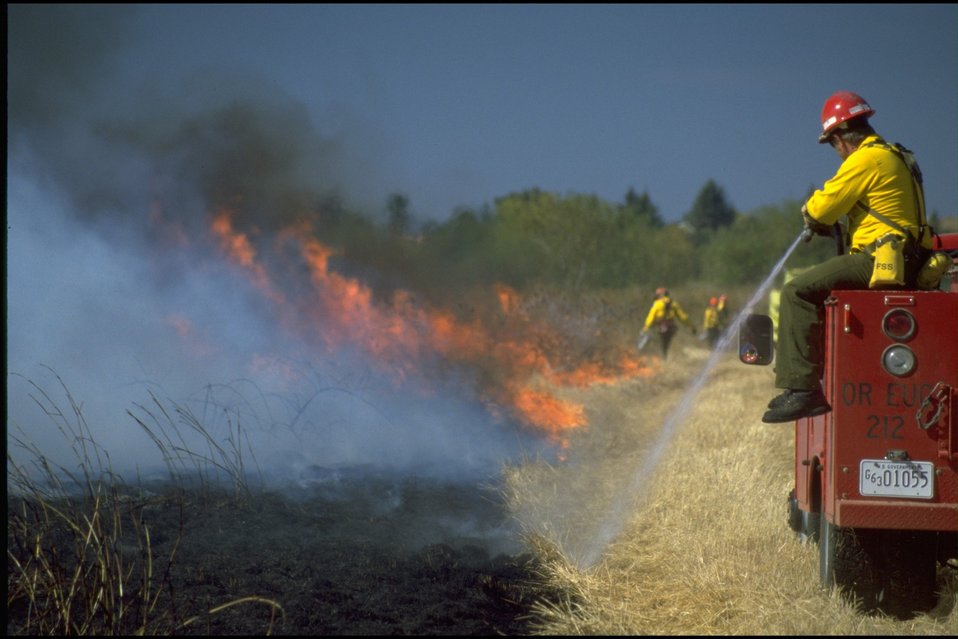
Turtle-Swale Wetland Burn.